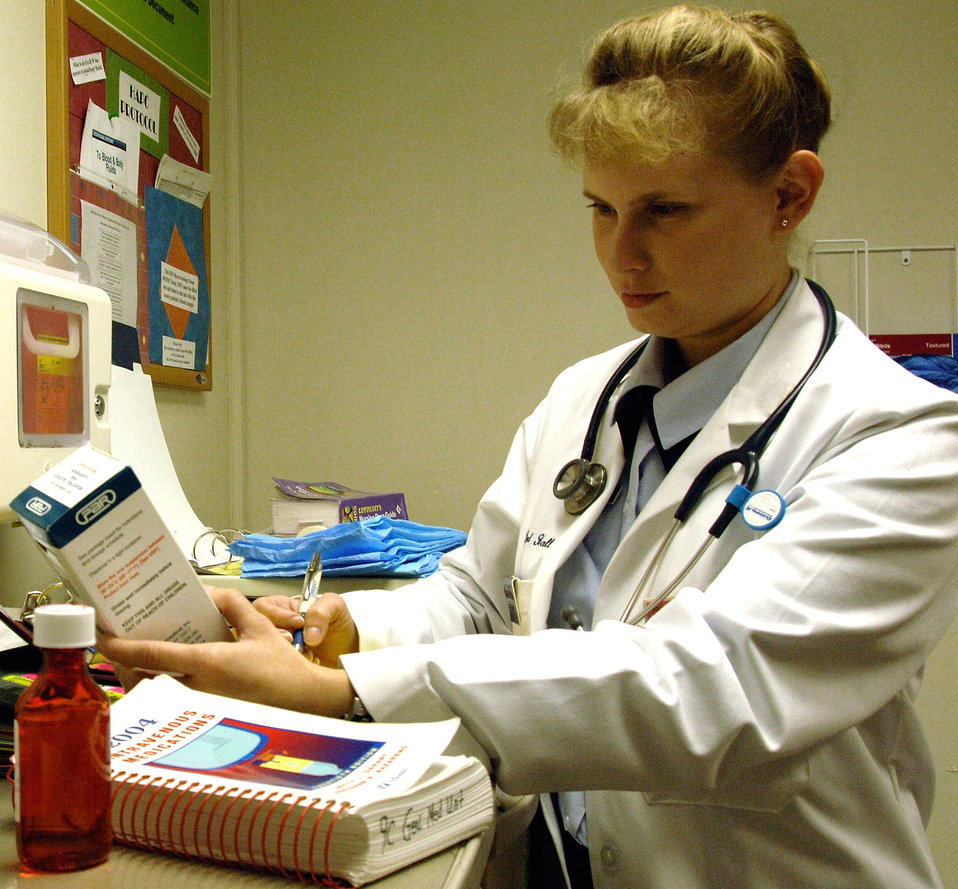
Air Force pharmacist receives award for excellence

Maj. Dr. Barbara Hoeben reviews medication profiles to ensure appropriate medication therapy selection and dosing. Major Hoeben is the 59th Diagnostics and Therapeutics Squadron Clinical Pharmacy Flight commander. She received the Association of Military Surgeons of the United States Award for Excellence in Clinical Pharmacy Practice.